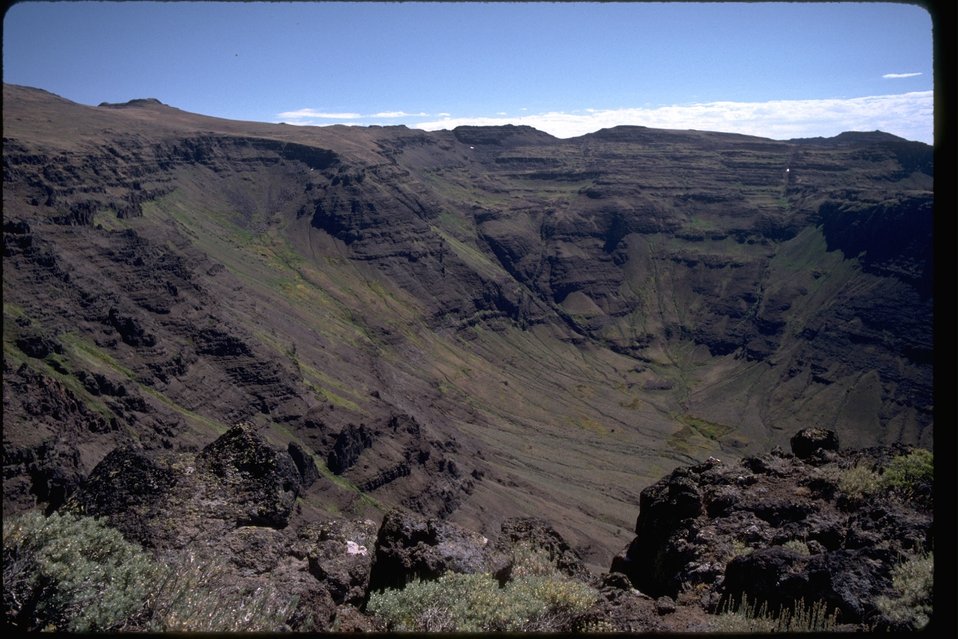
Head of Big Indian Gorge, a glacial valley on Steens Mountain in Southeast Oregon.